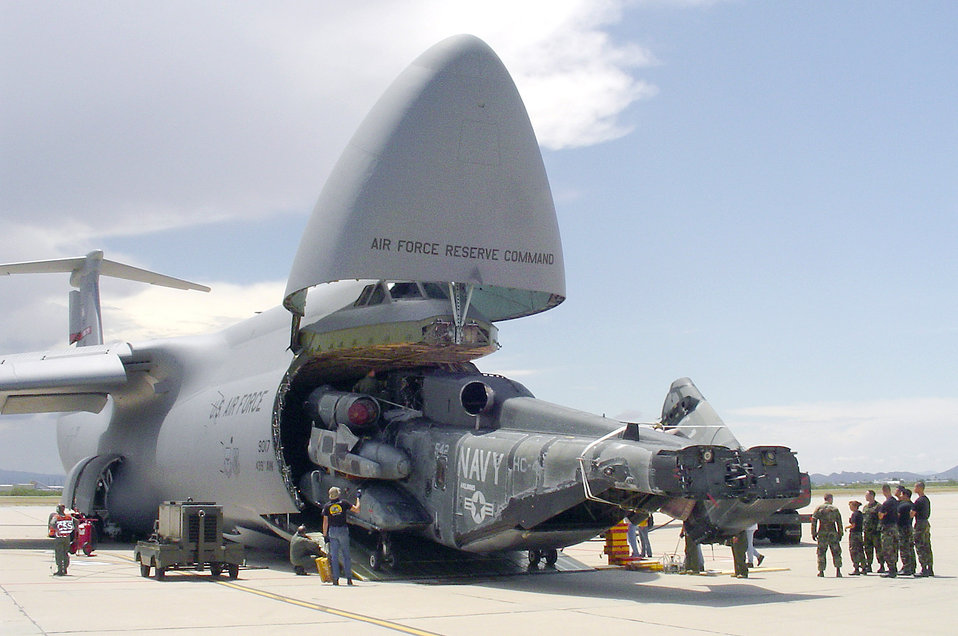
C-5 load

DAVIS-MONTHAN AIR FORCE BASE, Ariz. --The first of three Navy CH-53E Super Stallion helicopters departing the Aerospace Maintenance and Regeneration Center for Marine Corps Air Station Cherry Point, N.C., reaches the half-way point during loading into an Air Force C-5 Galaxy.